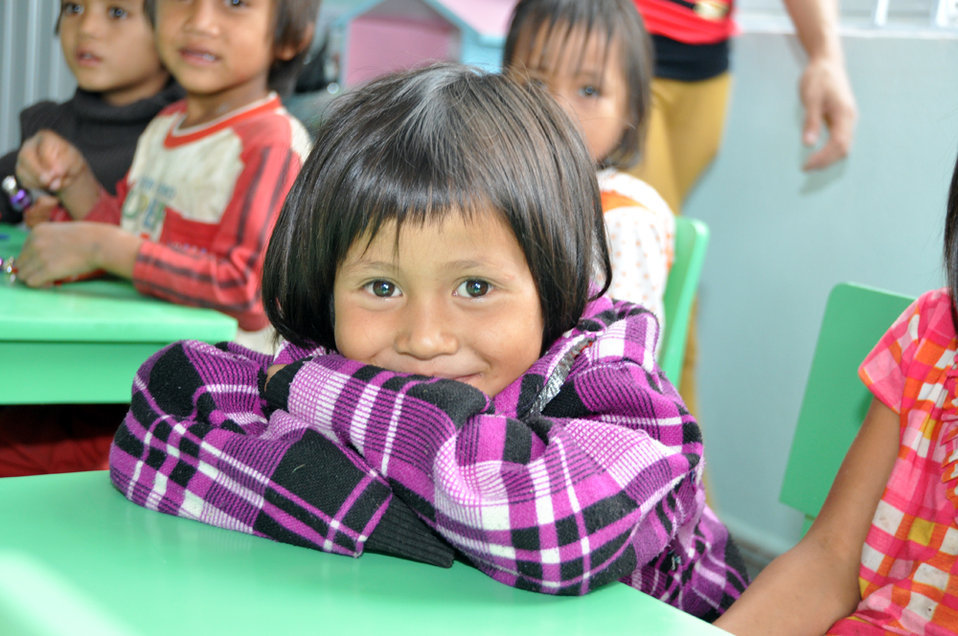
USAID contributes to refurbished pre-schools and teacher training in Vietnam